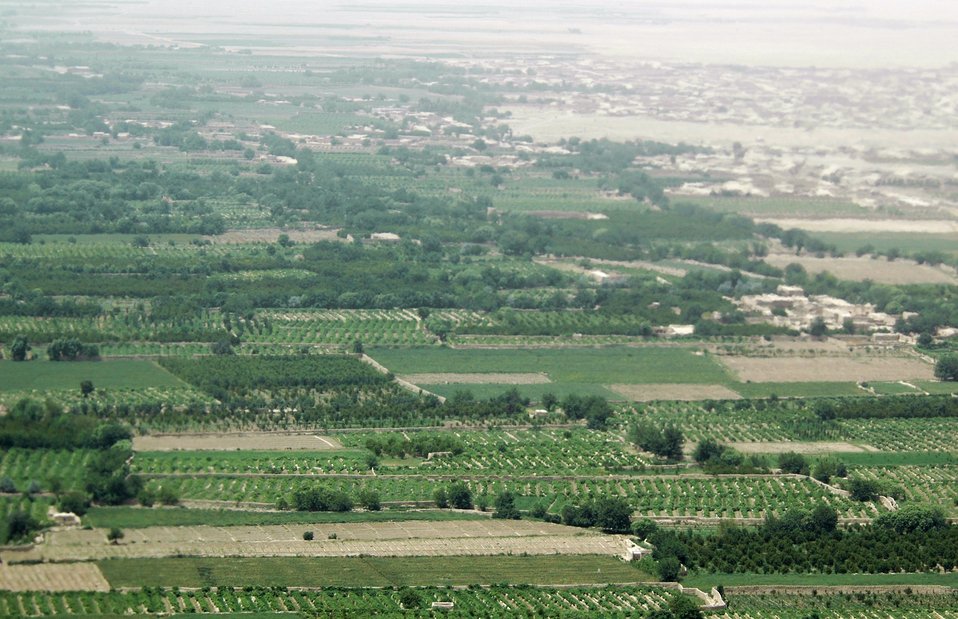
CODEL Berman